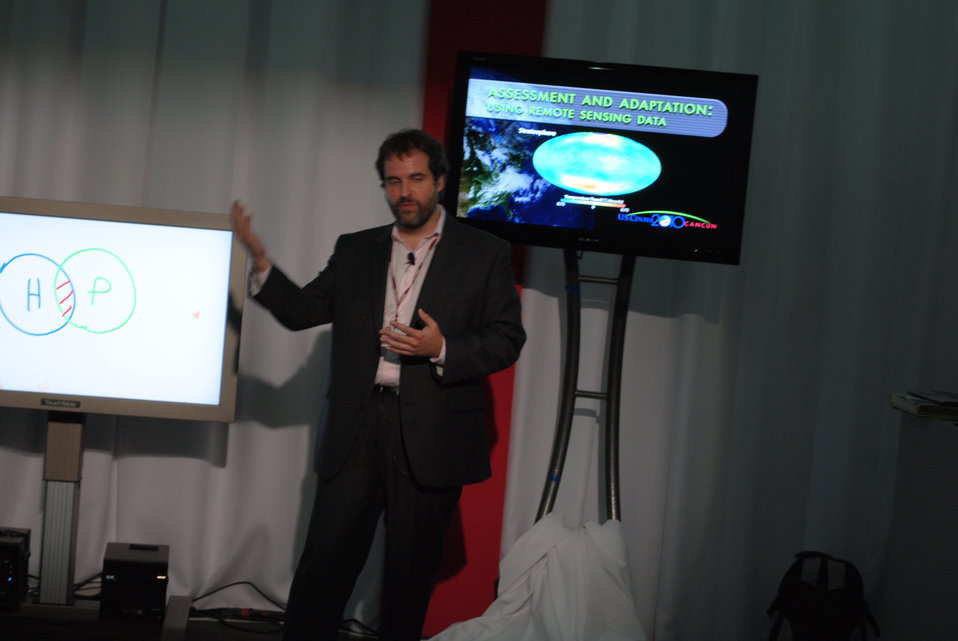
Rafael Ameller demonstrates the Touch Table at the U.S. Center at COP-16 in Cancun, Mexico, on December 7, 2010.